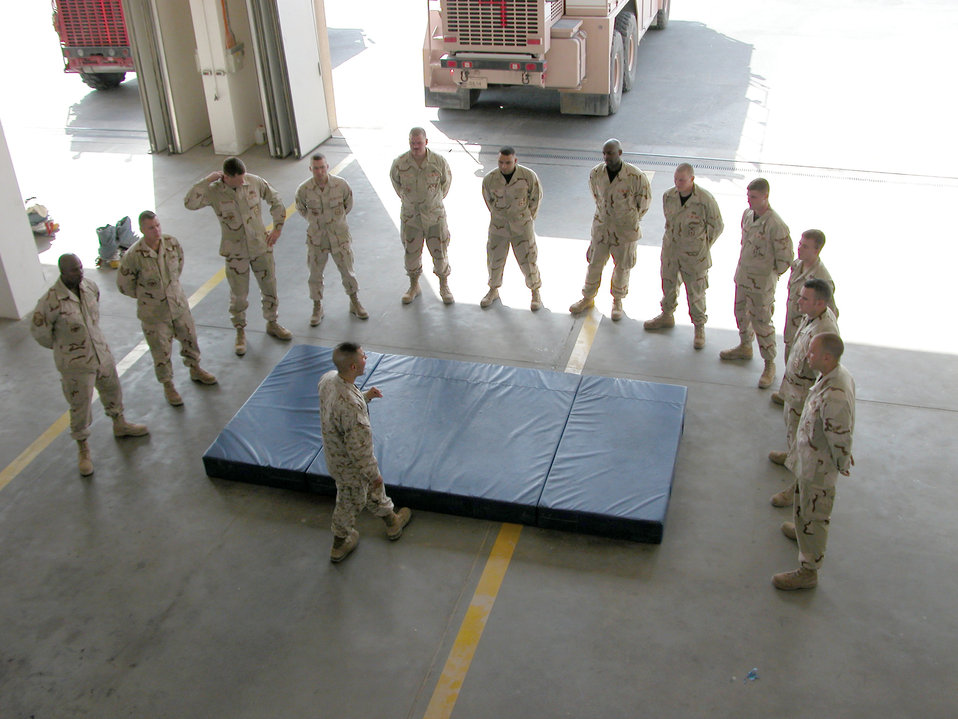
Deployed Marine teaches Aimen martial arts

SOUTHWEST ASIA - Marine Sgt. Luis Mercado speaks to students at a deployed location after they have completed a tan belt martial arts certification. Sergeant Mercado teaches Marines Corps-style hand-to-hand combat training to Airmen on his off-duty time.